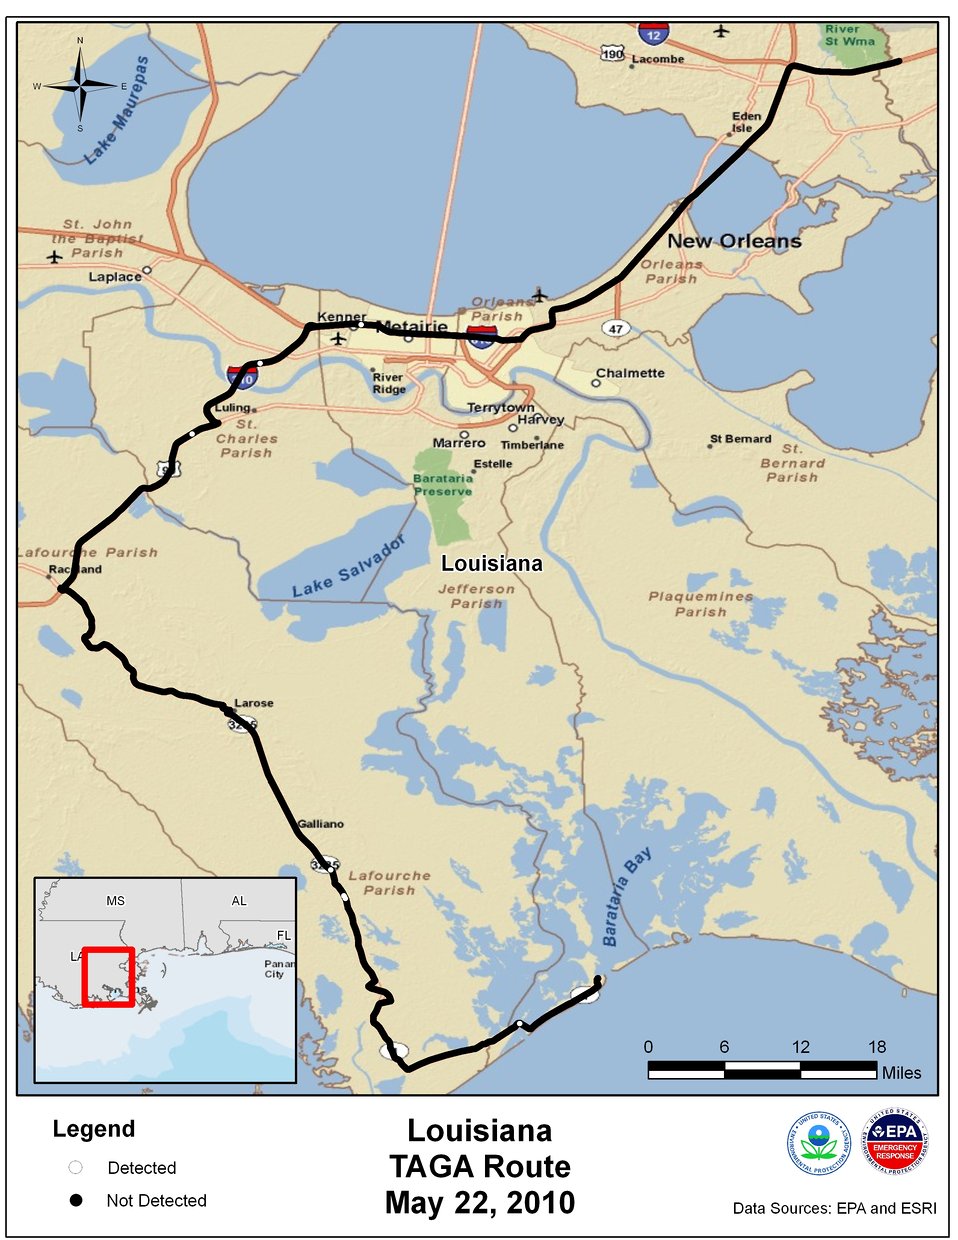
EPA TAGA Air Monitoring Locations May 22, 2010